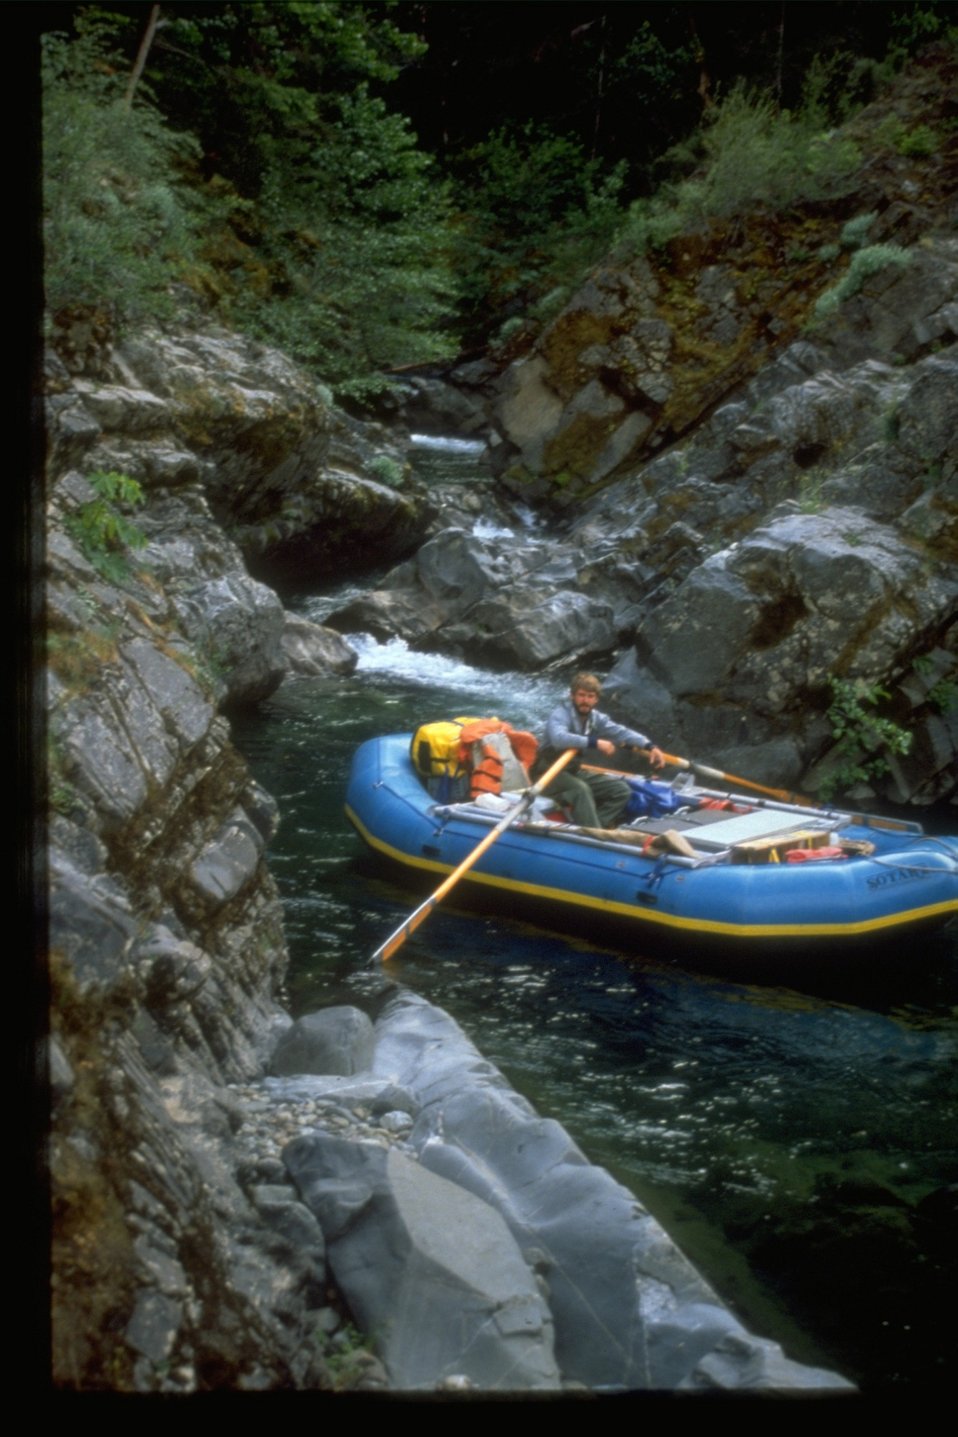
Rafting inside of Big Windy Creek.